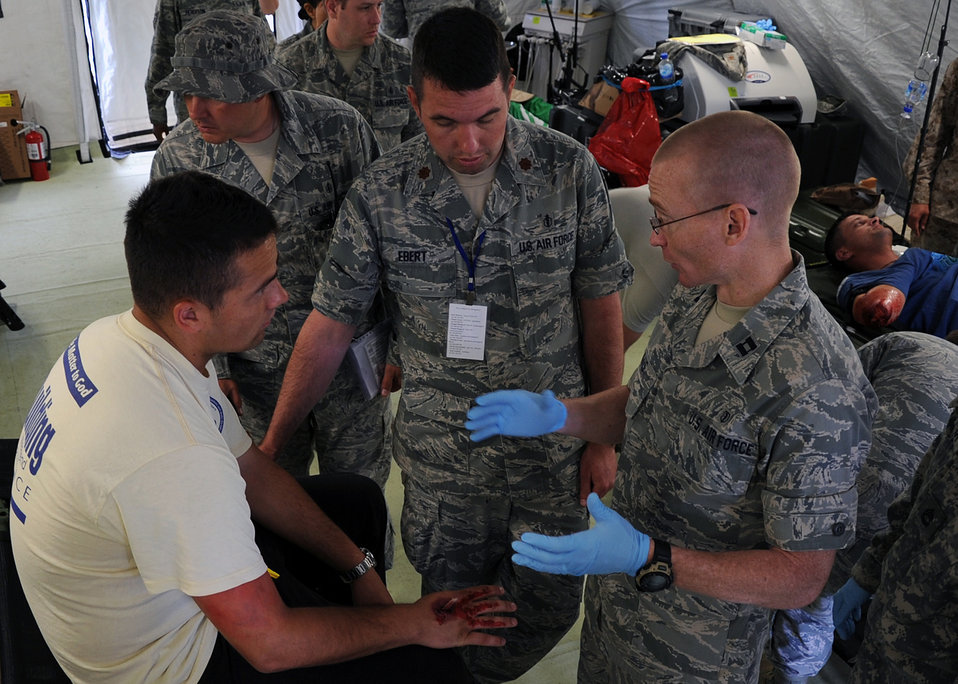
SR12 ends

U.S. Air Force Capt. Brian Davis, right, and Maj. Andy Ebert, middle, discuss a patient's injury during Shared Resilience 2012 at Capljina, Bosnia-Herzegovina, June 5, 2012. The goals of the exercise are to strengthen interoperability, facilitate training in crisis response and disaster management, and validate the readiness of deployable military medical and humanitarian assistance teams. Davis and Ebert are both from Royal Air Force Lakenheath, England.